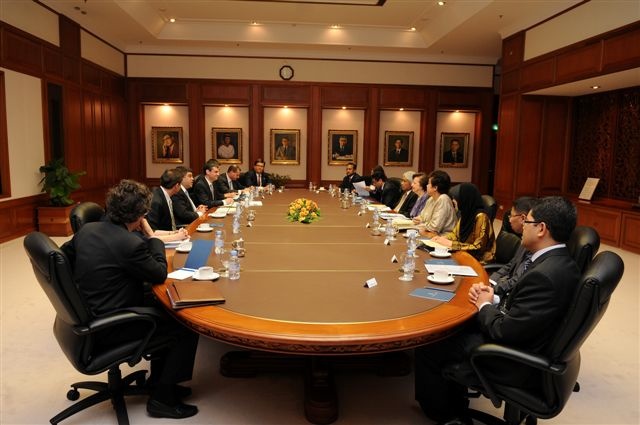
Deputy Secretary Wolin's Trip to the Pacific Rim

Deputy Secretary Neal Wolin's discussions with senior government officials and business leaders in Kuala Lumpur also focused on how Malaysia and the U.S. are working together to promote growth and expand trade and investment.